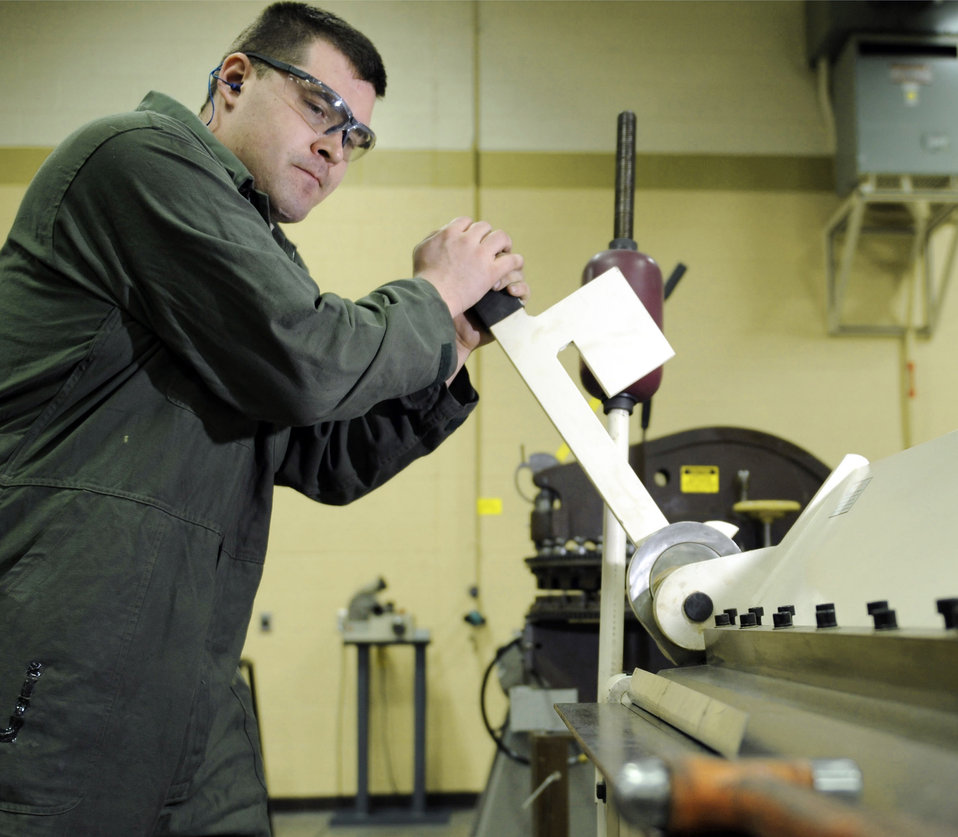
One more inch

Staff Sgt. Mason Johnson bends a seal retainer with a cornice brake Feb. 26 at Ellsworth Air Force Base, S.D. Structural maintainers use metalworking tools to manipulate replacements for damaged aircraft parts. The Airman is an aircraft structural maintenance craftsman.